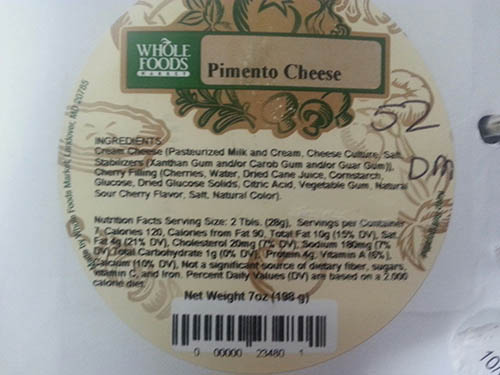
RECALLED – Pimiento Cheese

July 17, 2013 – Product Recall – Whole Foods Market’s Mid-Atlantic Region Recalls Pimiento Cheese Due to Undeclared Egg.